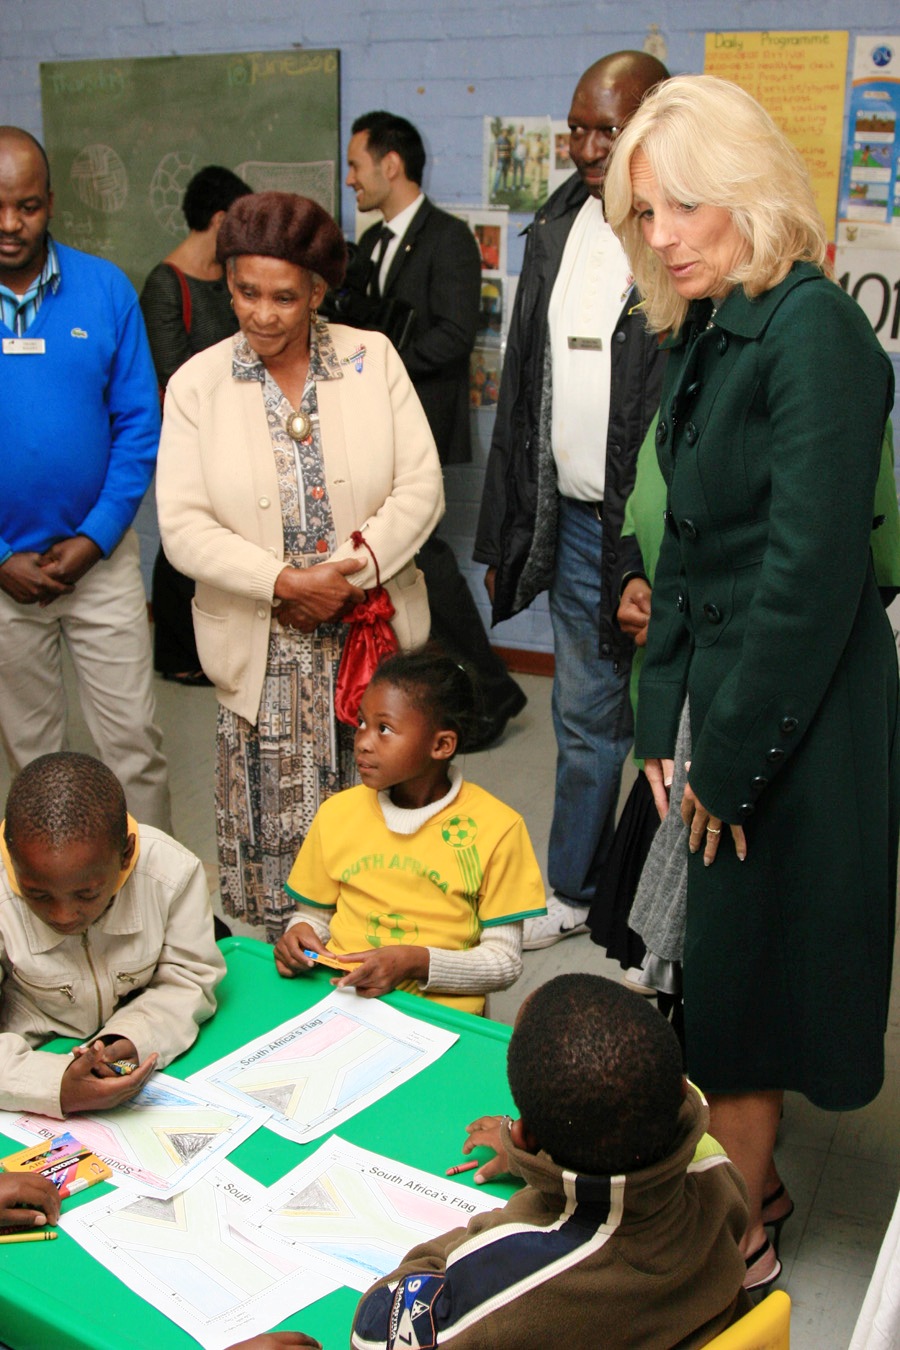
Dr. Jill Biden Observes Children

Dr. Jill Biden, wife of Vice President Joseph Biden, observes children during her visit to Mapetla Day Care Centre in Soweto, Johannesburg, South Africa, on June 10, 2010.